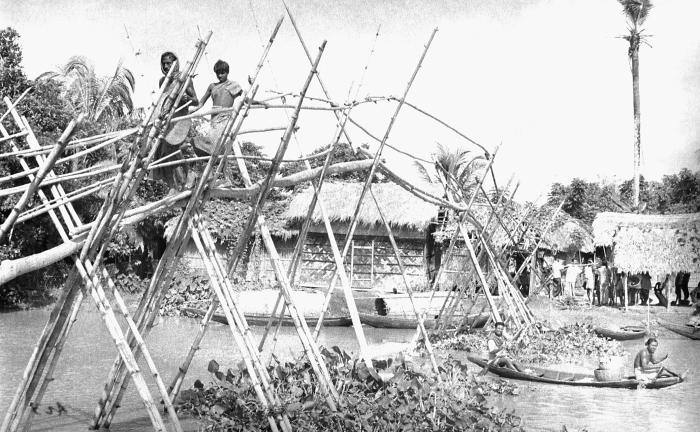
This 1975 image depicted a bamboo-constructed bridge used as an integral tool in daily Bangladesh village life, and was another of the routes eradication team members took when traveling from village to village throughout the waterway traversed nation. In his descriptions of many of these Bangladesh images, former E.I.S. Officer, Stanley O. Foster, M.D., M.P.H., stated that in his travels through Bangladesh during these eradication efforts of the 1970s, as he was traversing these bamboo bridges he actually fell from three of them into the river they were traversing. One of them broke under his weight.